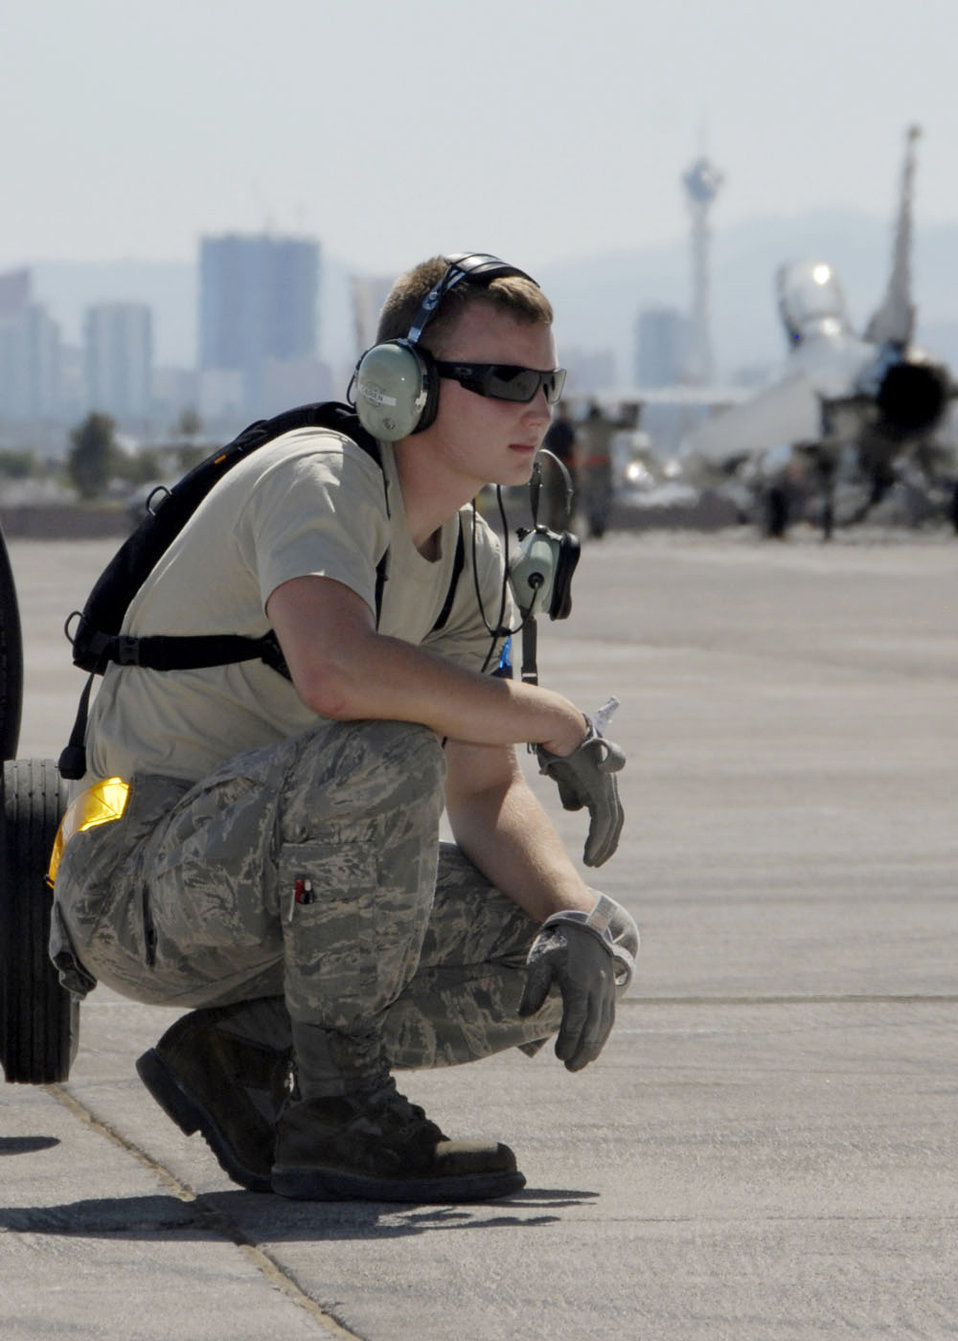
104th Fighter Wing comes to Red Flag

With downtown Las Vegas in the background, Airman 1st Class Kevin O'Brien keeps an eye on operations on the flightline at Nellis Air Force Base, Nev., Aug. 25 while waiting for aircraft from his unit to take off for a Red Flag training mission. Red Flag offers pilots and ground crews training in actual wartime scenarios to increase their combat skills. Airman O'brien is with the Massachusetts Air National Guard's 104th Fighter Wing at Barnes Air National Guard Base in Westfield, Mass.